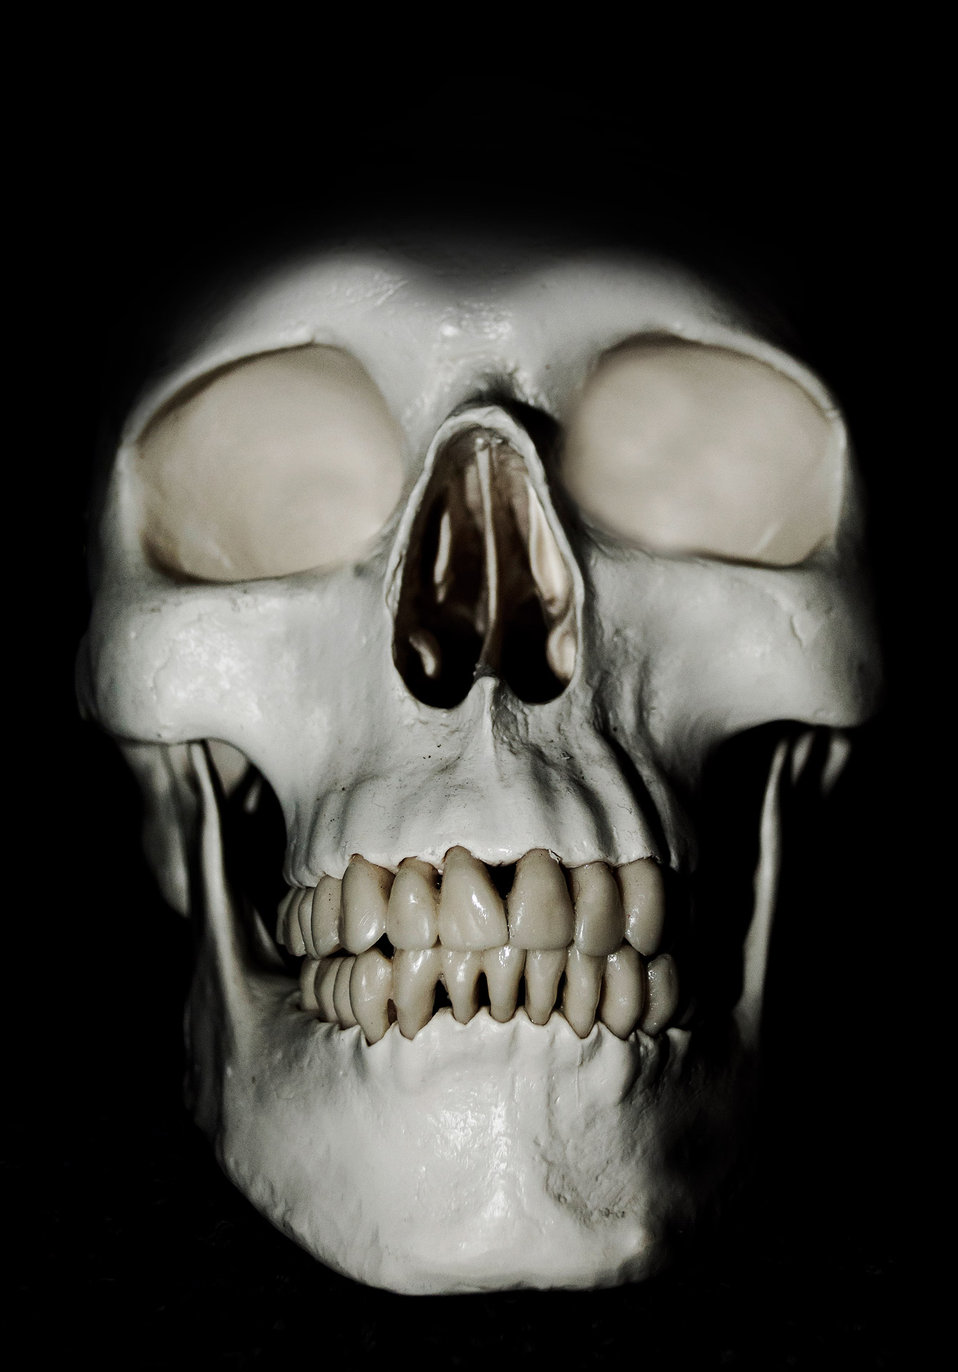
Halloween skulls.